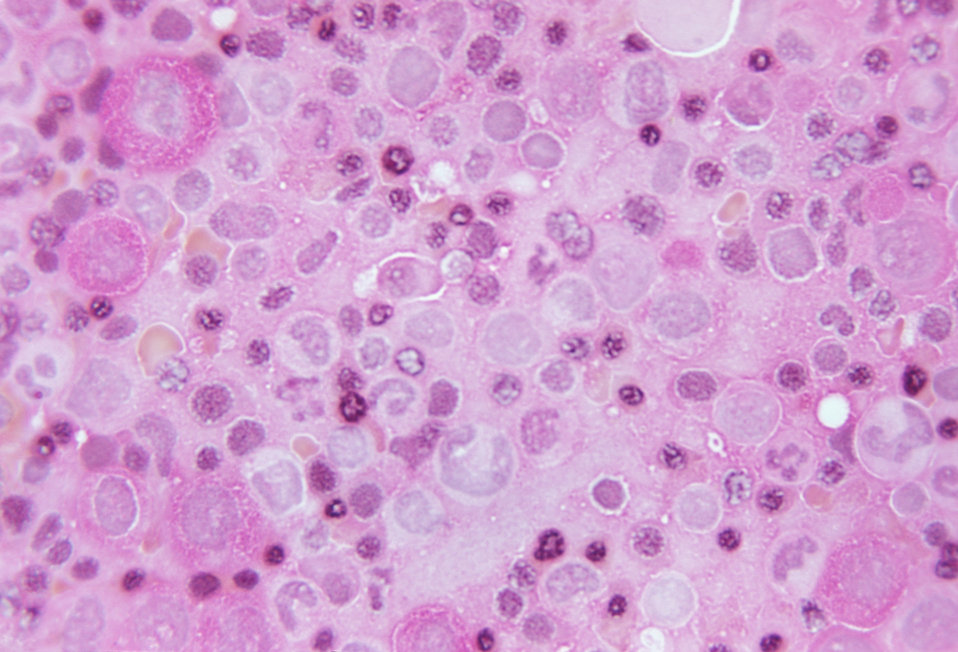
A photomicrograph of bone marrow showing a lack of iron stores using Prussian blue stain.